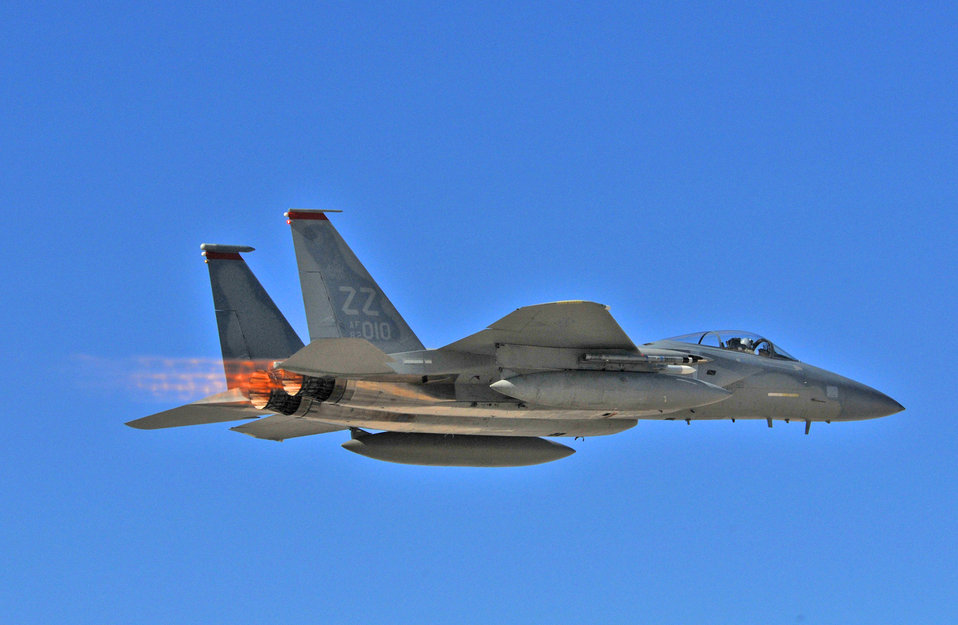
1,200 military members take part in Red Flag 10-2

An F-15 Eagle from Kadena Air Base, Japan, takes off during Red Flag Oct. 22, 2009, at Nellis Air Force Base, Nev. Twelve F-15s from the 44th Fighter Squadron, along with 160 maintenance and support personnel are attending Red Flag Nellis AFB from Jan. 18 through Feb. 5, 2010.